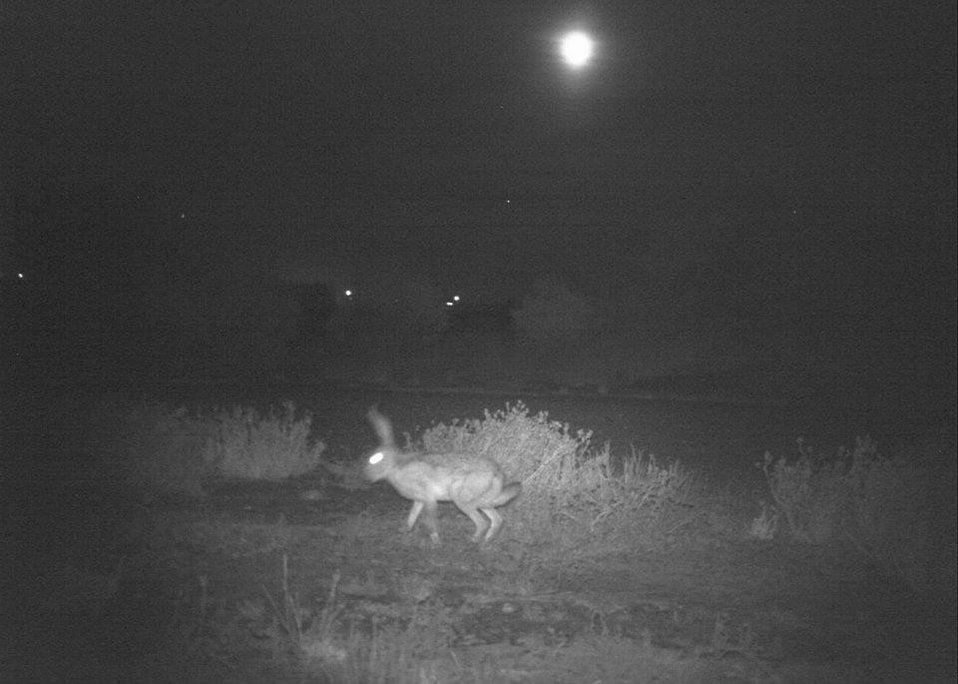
jack rabbit

Don Edwards San Francisco Bay National Wildlife Refuge, CA
Camera trap photo: Bryan White, USFWS